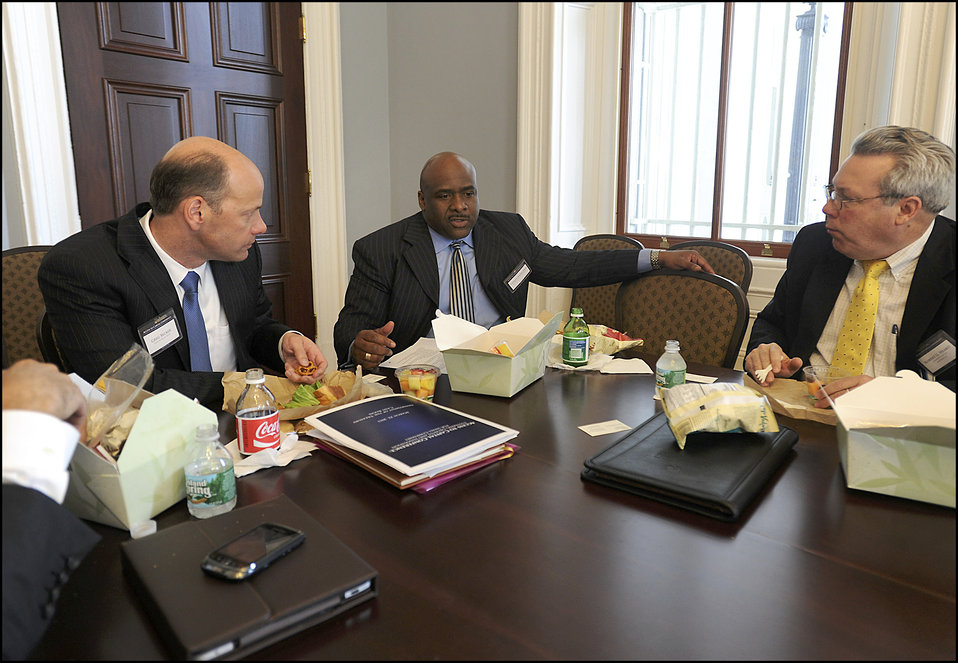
Access to Capital Conference

During breakout working lunch sessions, Treasury and Administration officials focused on various stages in the lifecycle of a small company. This breakout was on 'Capitalizing a Growing Company: Growth Equity and Debt Financing.'